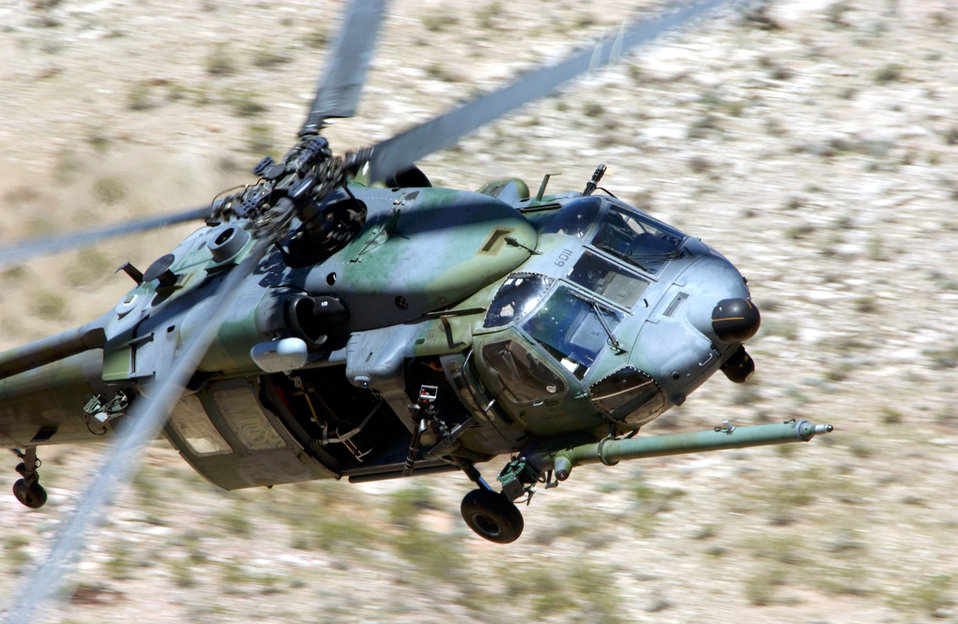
Desert training

NELLIS AIR FORCE BASE, Nev. -- A HH-60G Pave Hawk from the 66th Rescue Squadron, Nellis Air Force Base, Nev., flies over the desert terrain of southern Nevada during a training mission. The 66th Rescue Squadron's primary mission is the recovery of downed pilots and is one of only five active duty rescue squadrons in the Air Force.